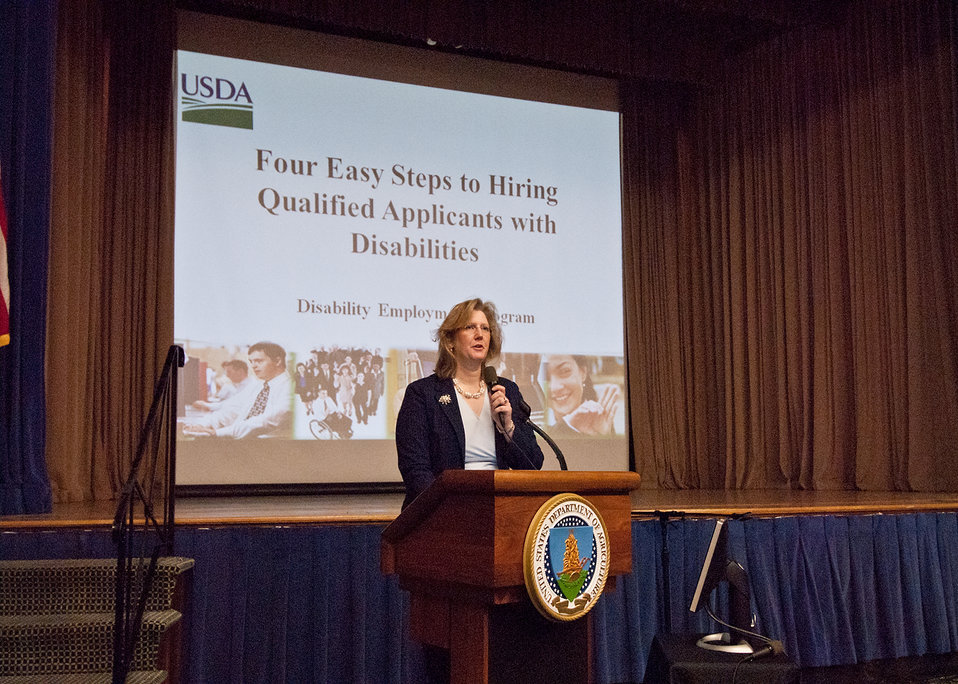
Alison Levy, Departmental Disability Employment Program Manager, Diversity Division, Office of Human Resources Management explained the “Four Easy Steps to Hiring Qualified Applicants with Disabilities” to USDA employees during National Disability Employment Awareness Month event in Washington, DC, Wednesday, October 5, 2011. Agriculture Secretary Tom Vilsack is dedicated to establishing the USDA as the lead Federal agency in employing individuals with disabilities. The theme for the event is “Profit by Investing in Workers with Disabilities.” USDA is committed to ensuring that all our programs are accessible and inclusive of individuals with disabilities.